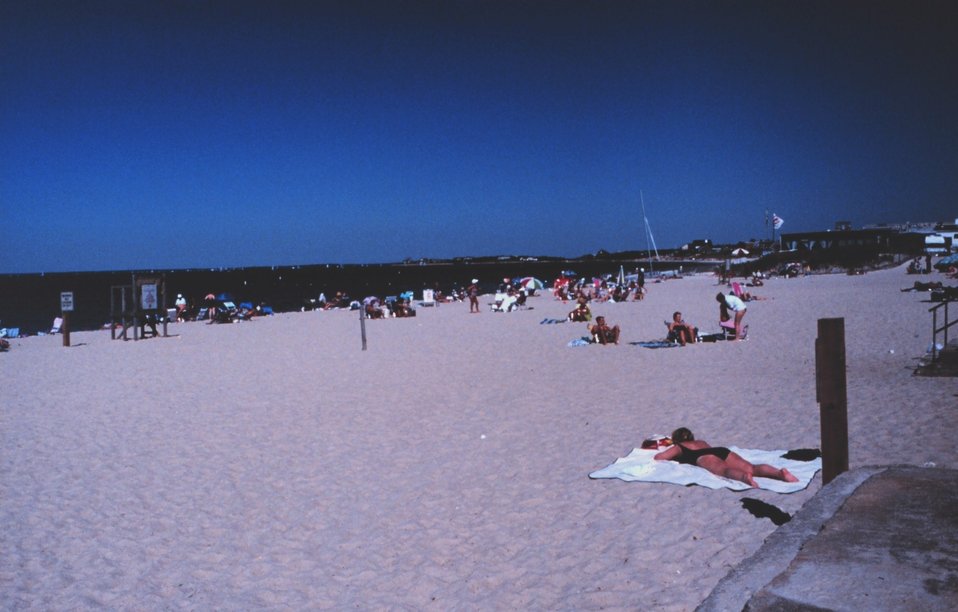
Old Silver Beach, West Falmouth